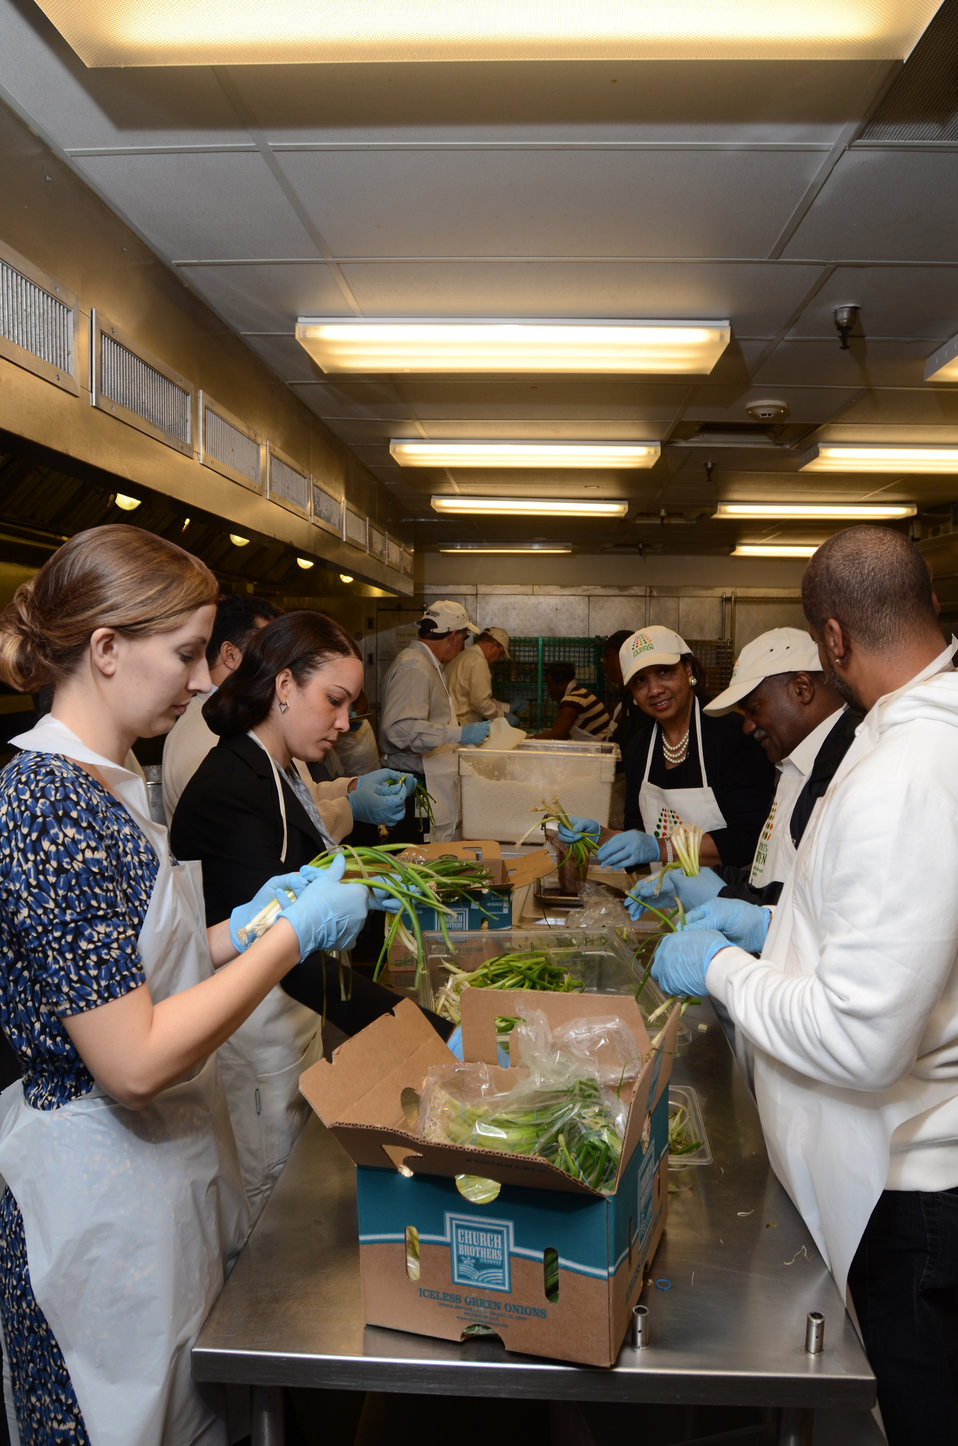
From left: Katie Yockam, Rural Development; Leslie Harvey, Departmental Management; Dr. Alma Hobbs, Associate Assistant Secretary for Administration; Pearlie Reed, Assistant Secretary for Administration; and William Milton Jr., Deputy Director, Office of Human Resource Management help prepare the evening meal at the D.C. Central Kitchen during USDA’s National Service Day on January 12, 2012. NSD honors Dr. Martin Luther Kings’s contributions to the Civil Rights Movement. The D.C. Central Kitchen turns leftover food into millions of meals for thousands of at-risk individuals while offering nationally recognized culinary job training to once homeless and hungry adults.